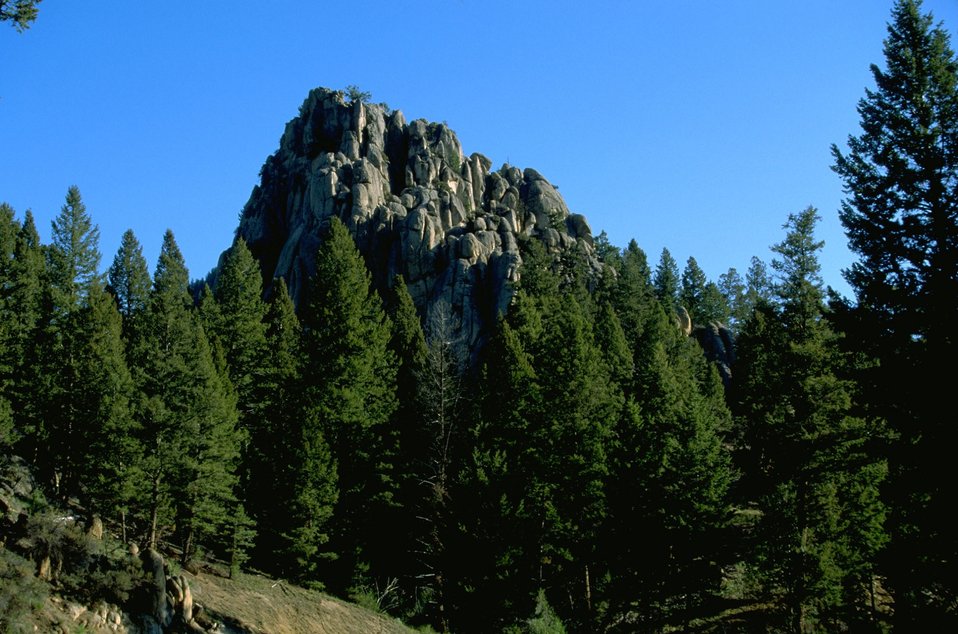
Scenic view of the rock formation